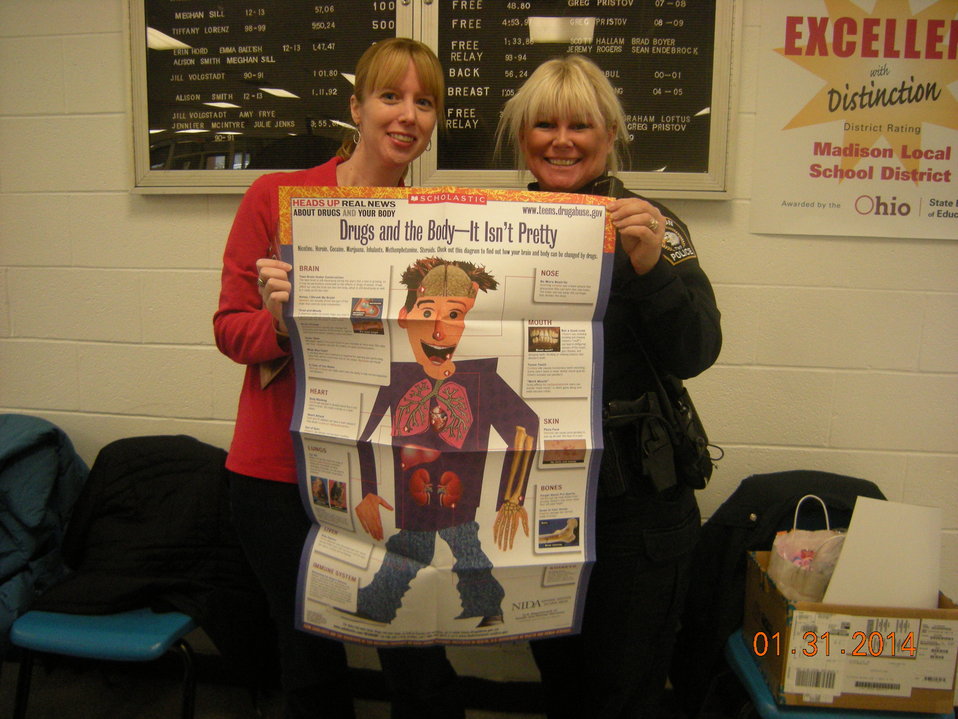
NDFW events held at Madison High School in Ohio on January 31st

This was a partnership between the high school and the Lake County General Health District. Students spun the wheel and answered questions based on information in the Dispel the Myths booklet and those finding the correct answers were entered to win a gift card. It turned out to be a fun day!